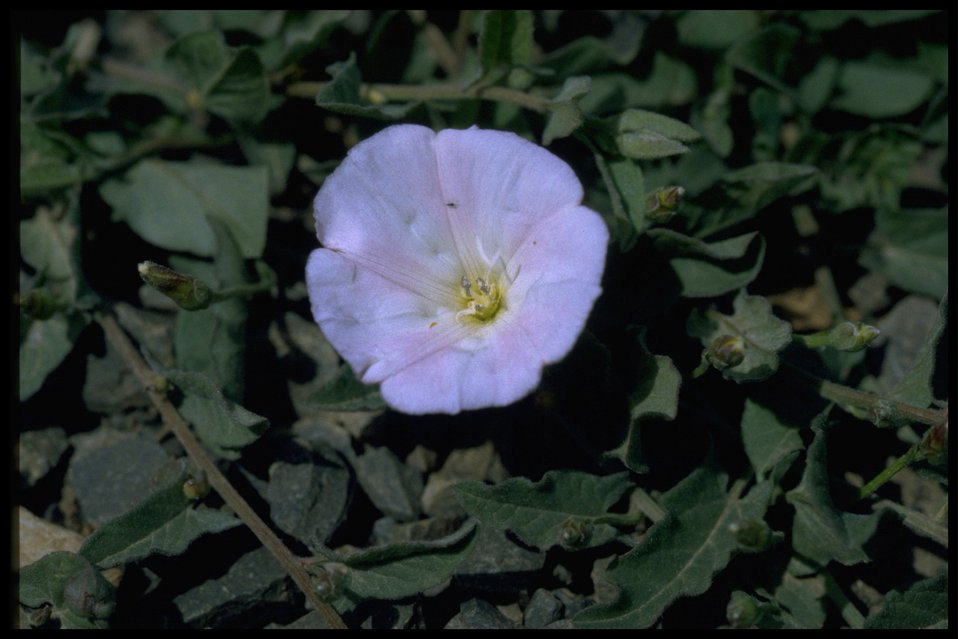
Closeup shot of Common bindweed wildflower.